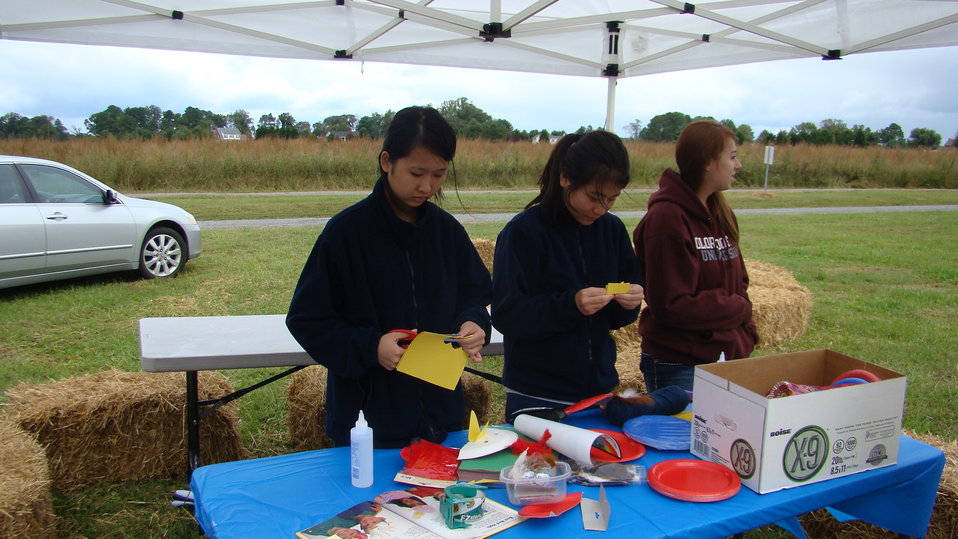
Rappahannock River Valley NWR 15th Anniversary

Bird hat craft at 'Go Wild!' celebration.